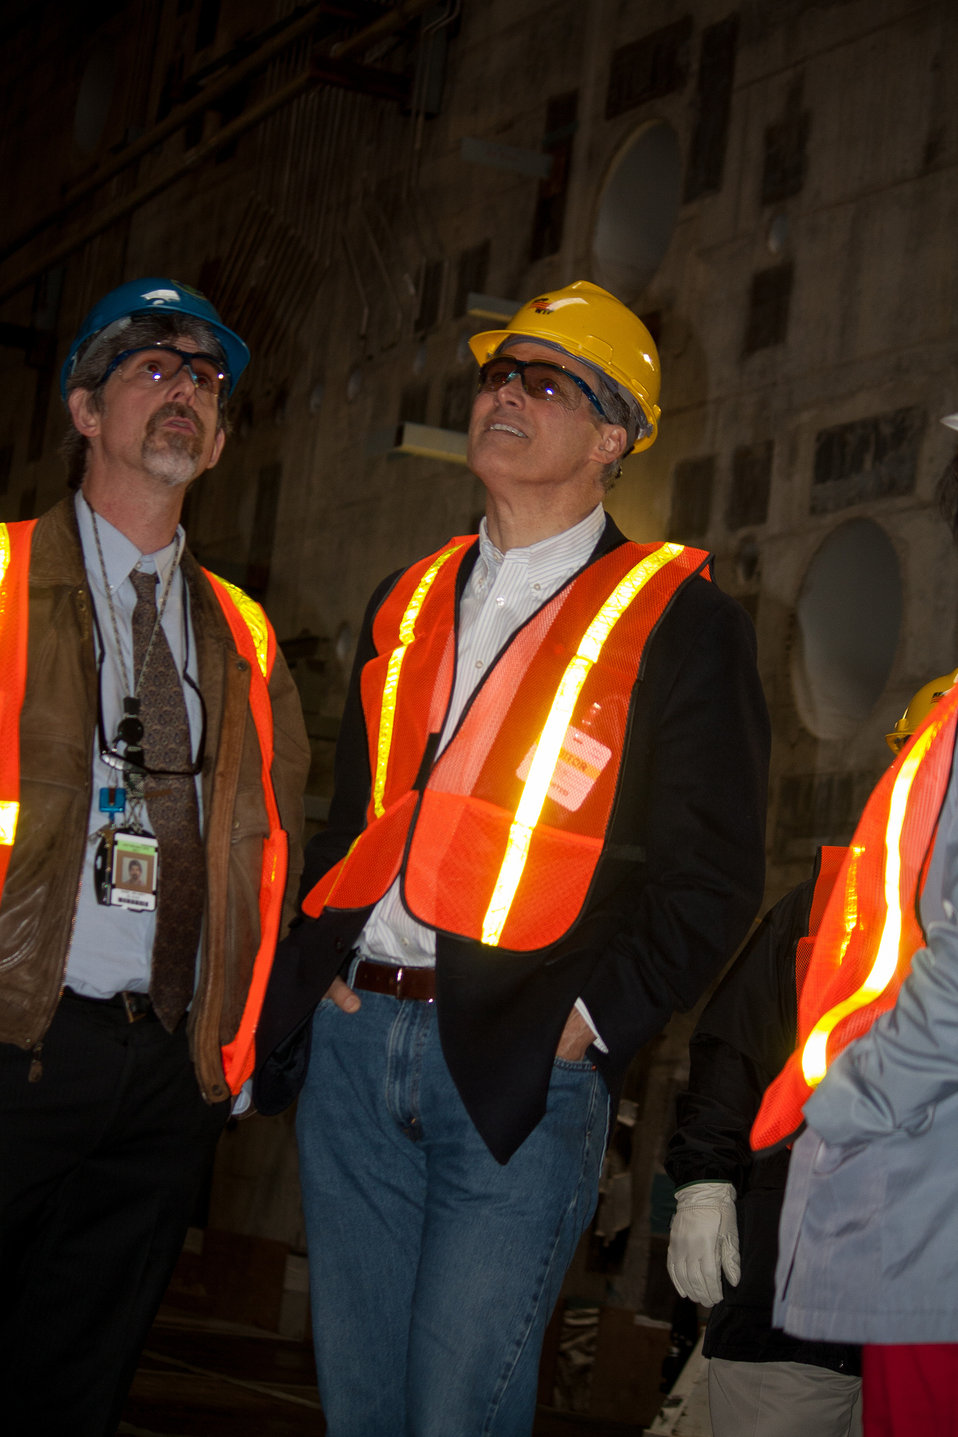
Inslee Visit at Hanford

Washington State Governor Jay Inslee, accompanied by Senior Advisor for Environmental Management Dave Huizenga, visits Hanford Tank Farms and Waste Treatment Plant